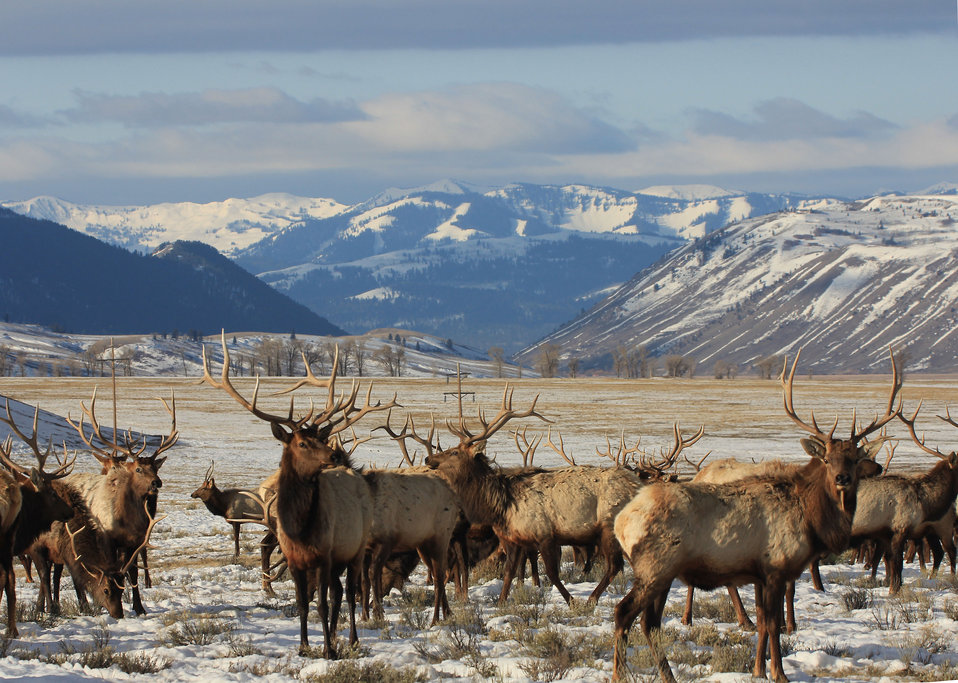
A Group of Bulls in the Morning Light

The morning sun casts a soft light on a group of bulls, all with their antlers intact. Photographed on March 16, most of these bulls will soon lose their antlers for the year.

Two additional sets within the National Elk Refuge photo collection (www.flickr.com/photos/usfwsmtnprairie/collections/7215762...) share pictures and information about elk antlers:

Elk Antlers - www.flickr.com/photos/usfwsmtnprairie/sets/72157627926248...
Antler Auction - www.flickr.com/photos/usfwsmtnprairie/sets/72157627925186...

Credit: USFWS / Tony Hough, National Elk Refuge volunteer